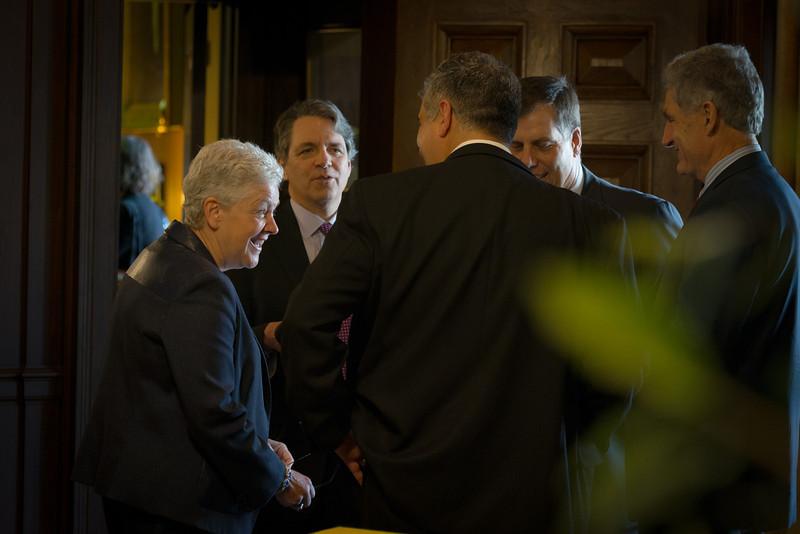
Day in the Life - June 2, 2014

9:26 am - McCarthy shares a laugh with some of the staff that helped craft the proposal to reduce carbon pollution from existing power plants. (2/15)